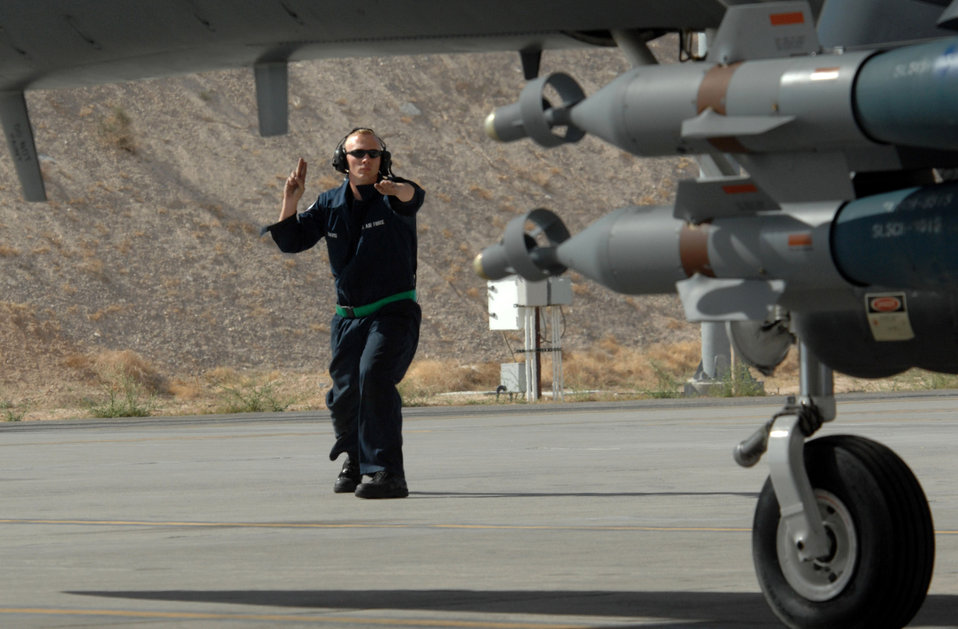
Green Flag launches Strike Eagles into the air

Airman 1st Class Travis Davis launches an F-15 E Strike Eagle in support of Exercise Green Flag April 24 at Nellis Air Force Base, Nev. Green Flag is Air Combat Command's premier pre-deployment exercise for units who perform close-air support. The training exercise, which began April 19 and runs through May 4, mirrors many of the irregular warfare-conditions aircrews will see while fighting the war on terrorism. During Green Flag, aircrews will try to learn better ways to employ airpower within an irregular warfare environment. Airman Davis is a crew chief assigned to the 335th Fighter Squadron from Seymor Johnson AFB, N.C.